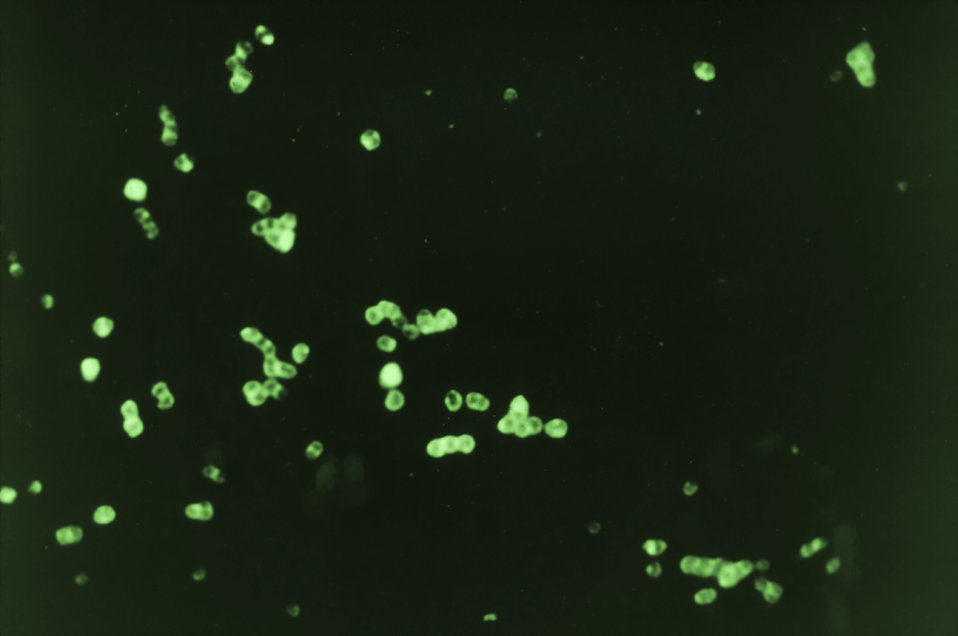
Enhanced by using a direct fluorescent antibody (DFA) staining technique, this 1961 photomicrograph revealed the presence of numbers of Gram-negative Neisseria gonorrhoeae bacteria.